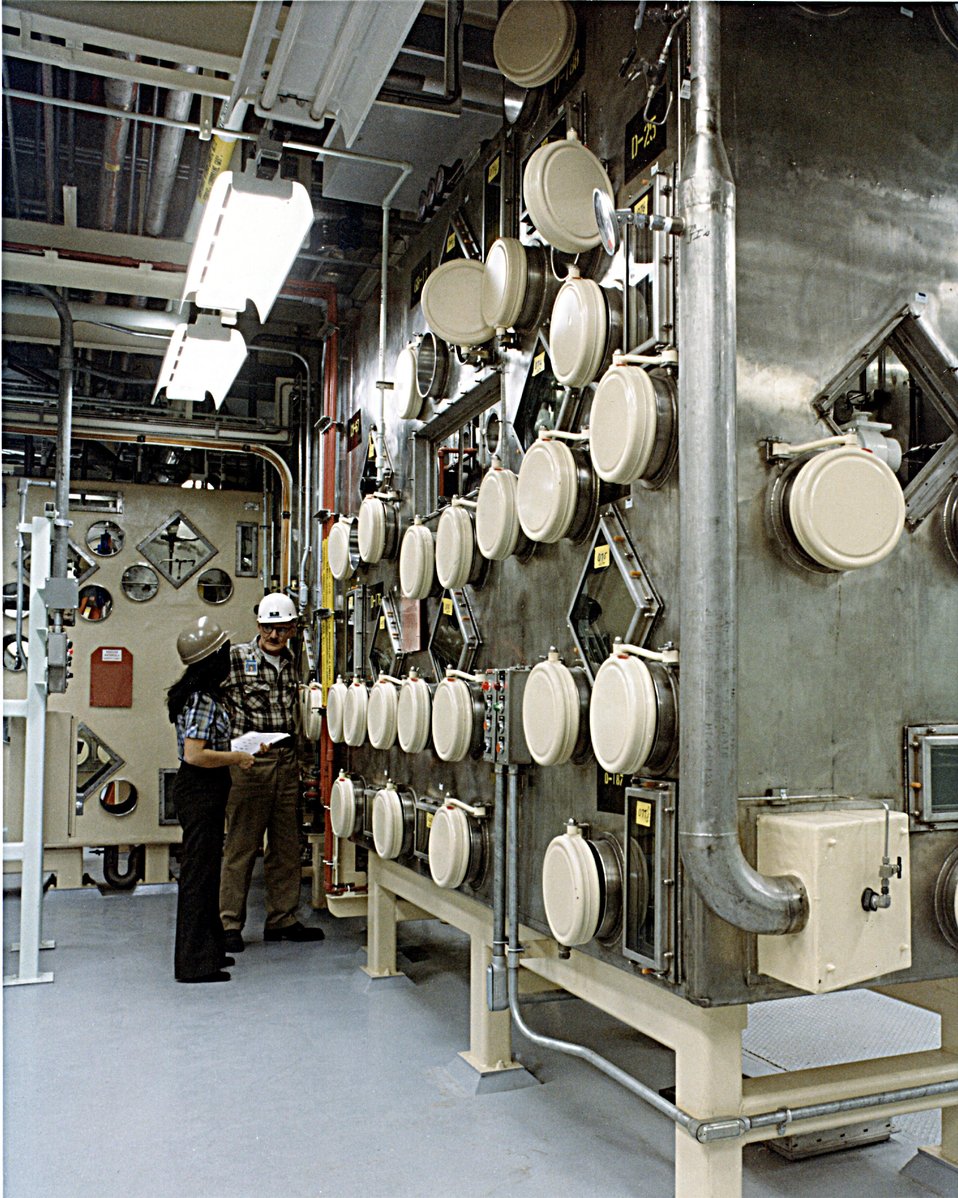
TYPICAL GLOVEBOX LINE IN BUILDING 371.

ALL PLUTONIUM OPERATIONS AT THE PLANT ARE CARRIED OUT IN HIGHLY SPECIALIZED FACILITIES, PROTECTING THE EMPLOYEES AND THE SURROUNDING POPULATION AND ENVIRONMENT. THE BUILDING IS DESIGNED TO WITHSTAND TORNADO, EARTHQUAKE, SNOW STORM, AND FLOOD DAMAGE. THE FACILITY IS ONE LARGE STRUCTURE DI- VIDED INTO THREE AREAS: PLUTONIUM RECOVERY, WASTE TREAT- MENT, AND SUPPORT. PERSONNEL PROTECTION IS PROVIDED BY SPECIAL PROTECTION DEVICES, FOR EXAMPLE, PLUTONIUM IS HANDLED REMOTELY FROM INSTRUMENTED CONTROL ROOMS, IN SHIELD-ED GLOVEBOXES, AND IN CONCRETE VAULT CANYONS. THIS FACILITY IS CURRENTLY BEING REEVALUATED TO DEVELOP A REVISED AND UPGRADED PROCESS.